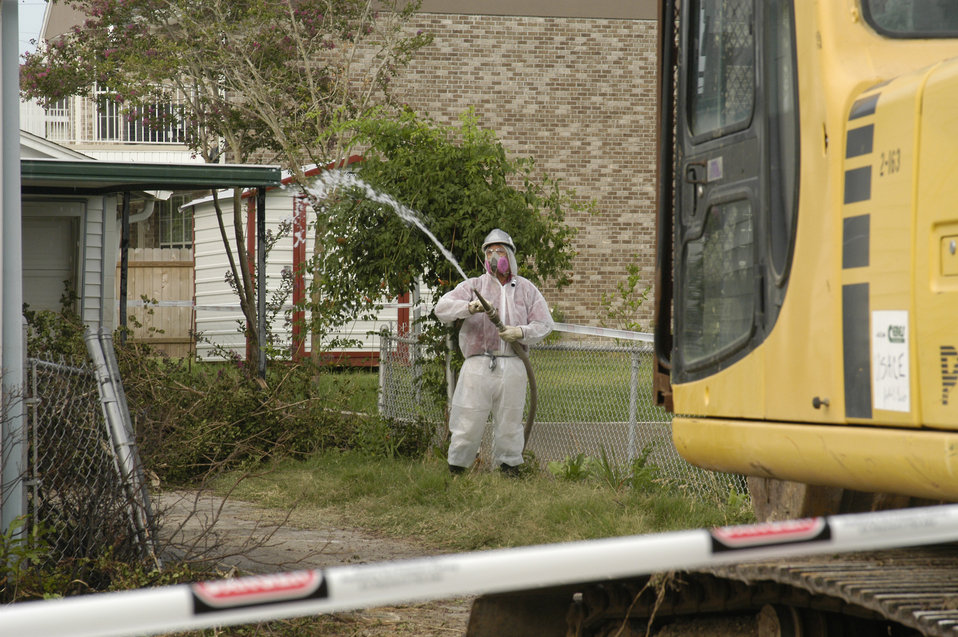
Many of the older homes and buildings in the New Orleans, LA, locale that were destroyed by Hurricane Katrina contained asbestos material (i.e. asbestos roofing tiles, transite siding, insulation, floor tiles, and popcorn ceilings). The U.S. Army Corps of Engineers (USACE) was mandated to follow strict environmental protocols in the demolition of these homes that were designated Regulated Asbestos Containing Material (RACM) demolitions. Prior to and during the demolition of the RACM house, water was constantly sprayed onto the building to prevent the asbestos containing material from becoming “friable” (airborne).